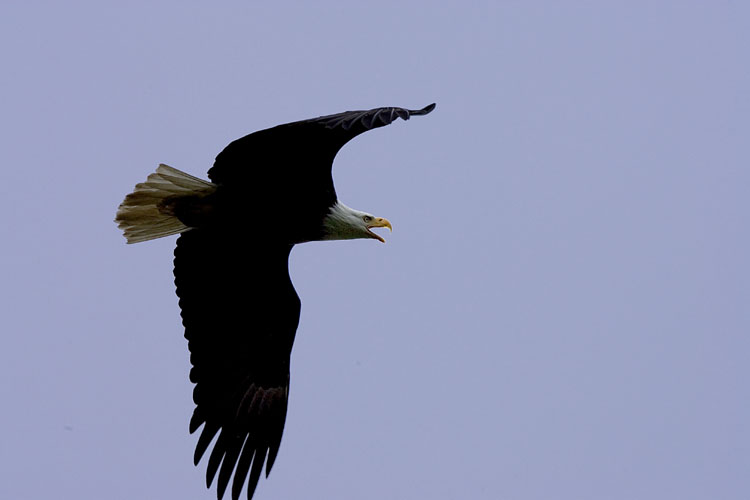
Wildlife of Kodiak Refuge